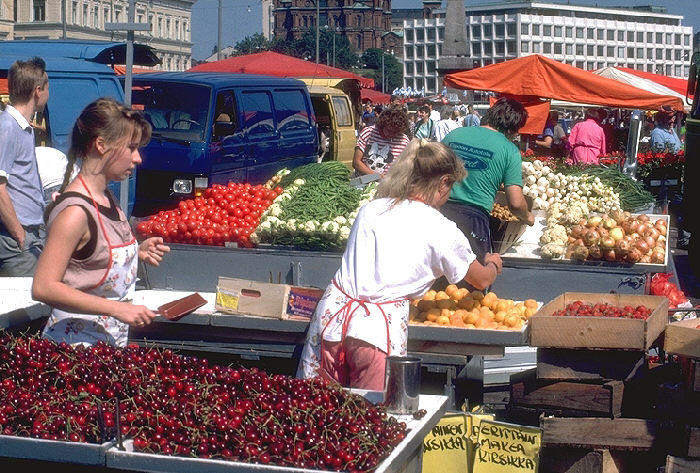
Outdoor produce market in Helsinki, Finland.